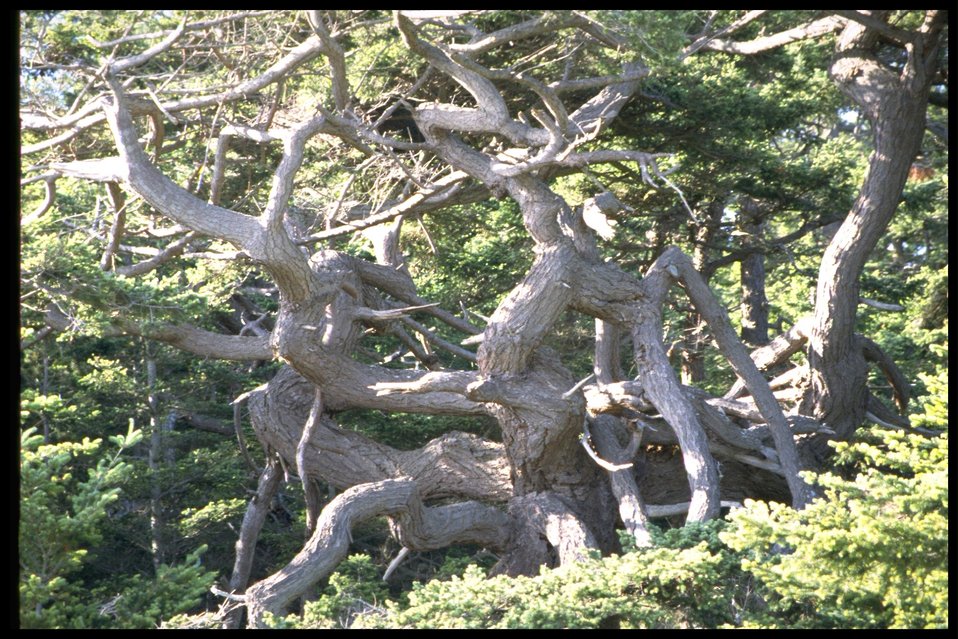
Windswept narly tree at Point Colville.